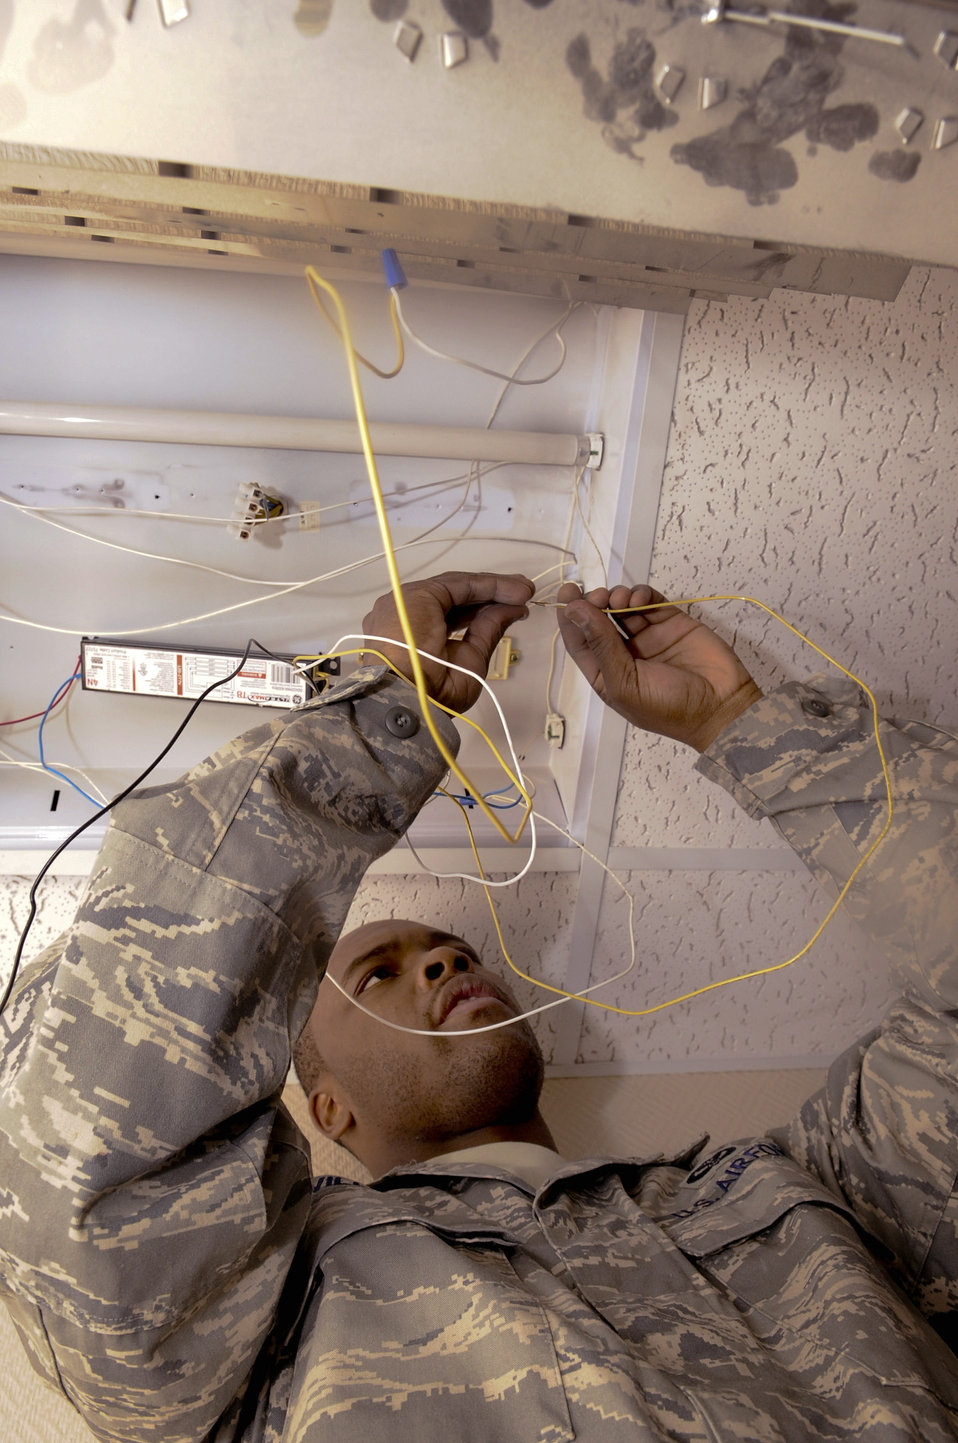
Airmen provide power to the people

Senior Airman Augustus Williams replaces the ballast of a light fixture Jan. 14 at an air base in Southwest Asia. Airman Williams is a 379th Expeditionary Civil Engineer Squadron electrician and deployed from Pope Air Force Base, N.C. He is a native of Augusta, Ga.